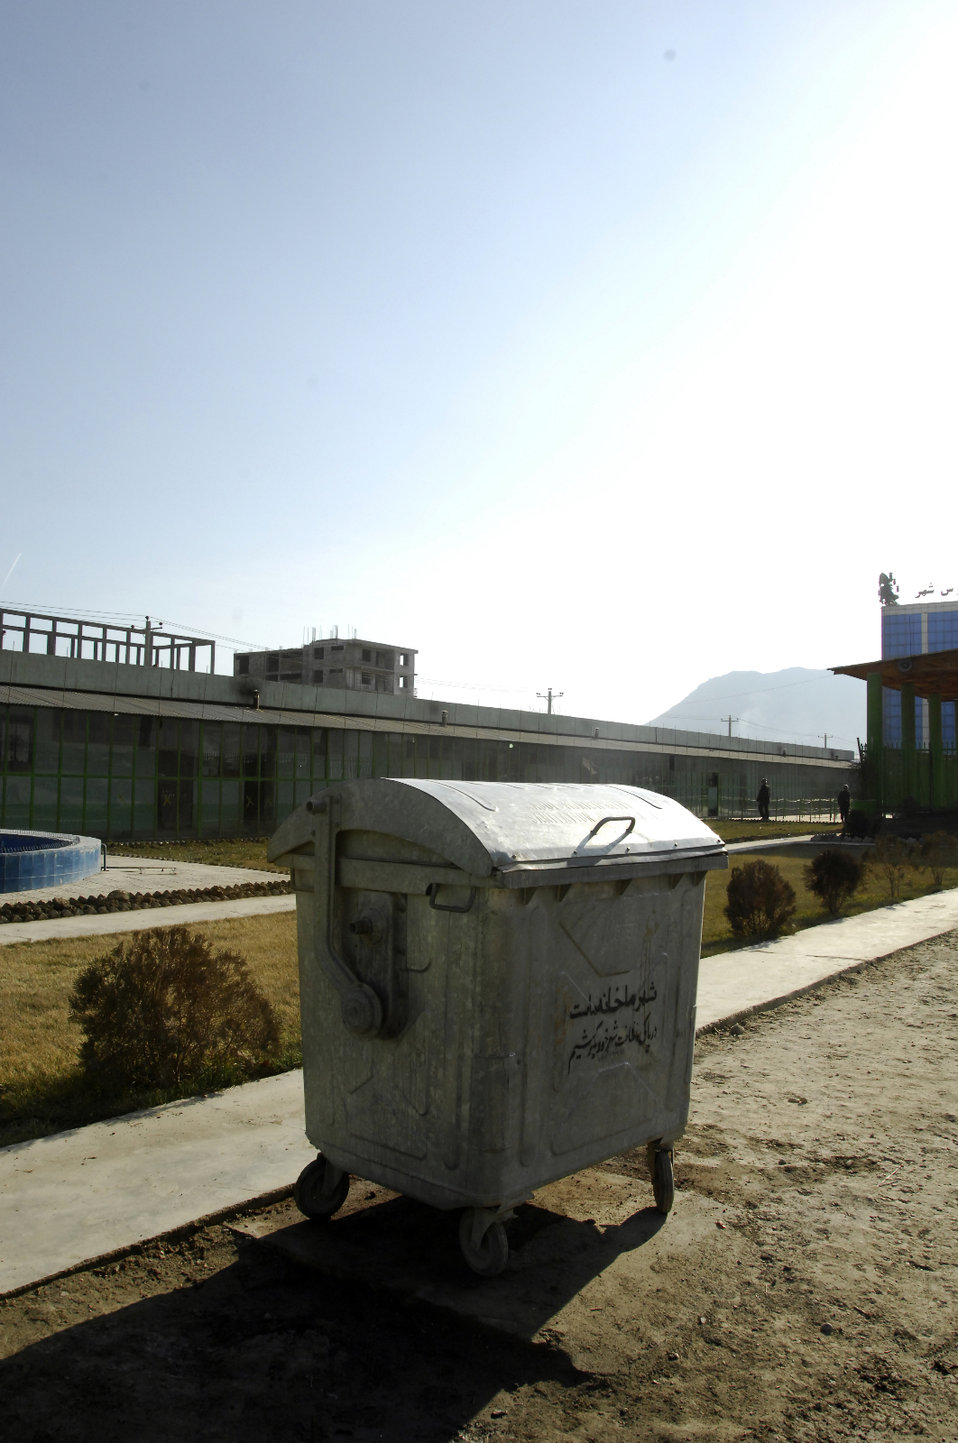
Care65